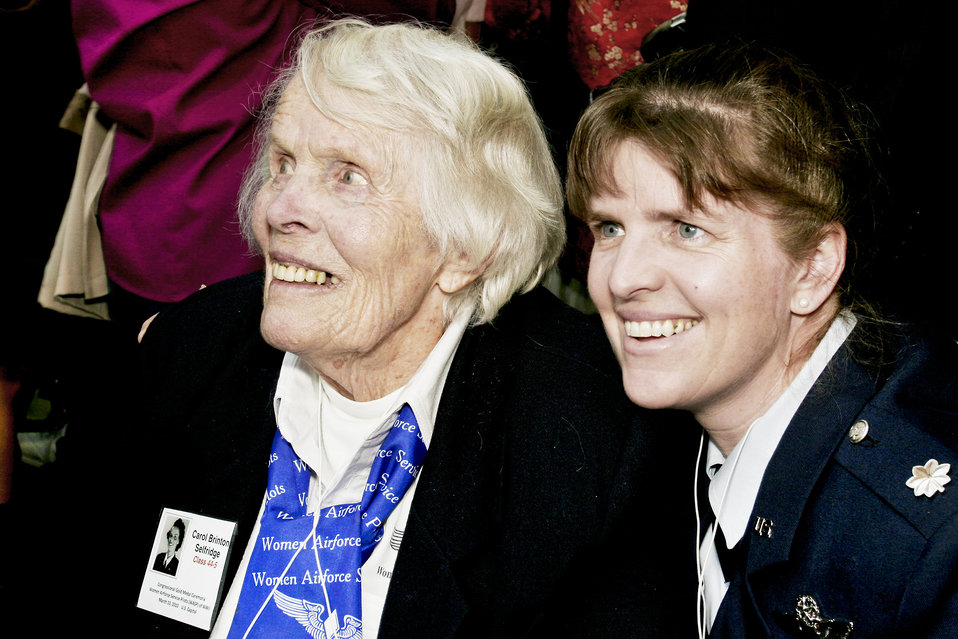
Women pilots of World War II inspired generations

Carol Brinton Selfridge, 92 and a member of the Women Airforce Service Pilots Class 44-5, and her grandaughter, Lt. Col. Christy Kayser-Cook, share a moment during the reception to honor women civilian pilots who flew with the Women Airforce Service Pilots at the Women in Military Service for America Memorial March 9, 2010, at Arlington National Cemetery, Va. The reception followed a wreath-laying ceremony and both were part of a two-day event in which all pilots will receive the Congressional Gold Medal at the U.S. Capitol.